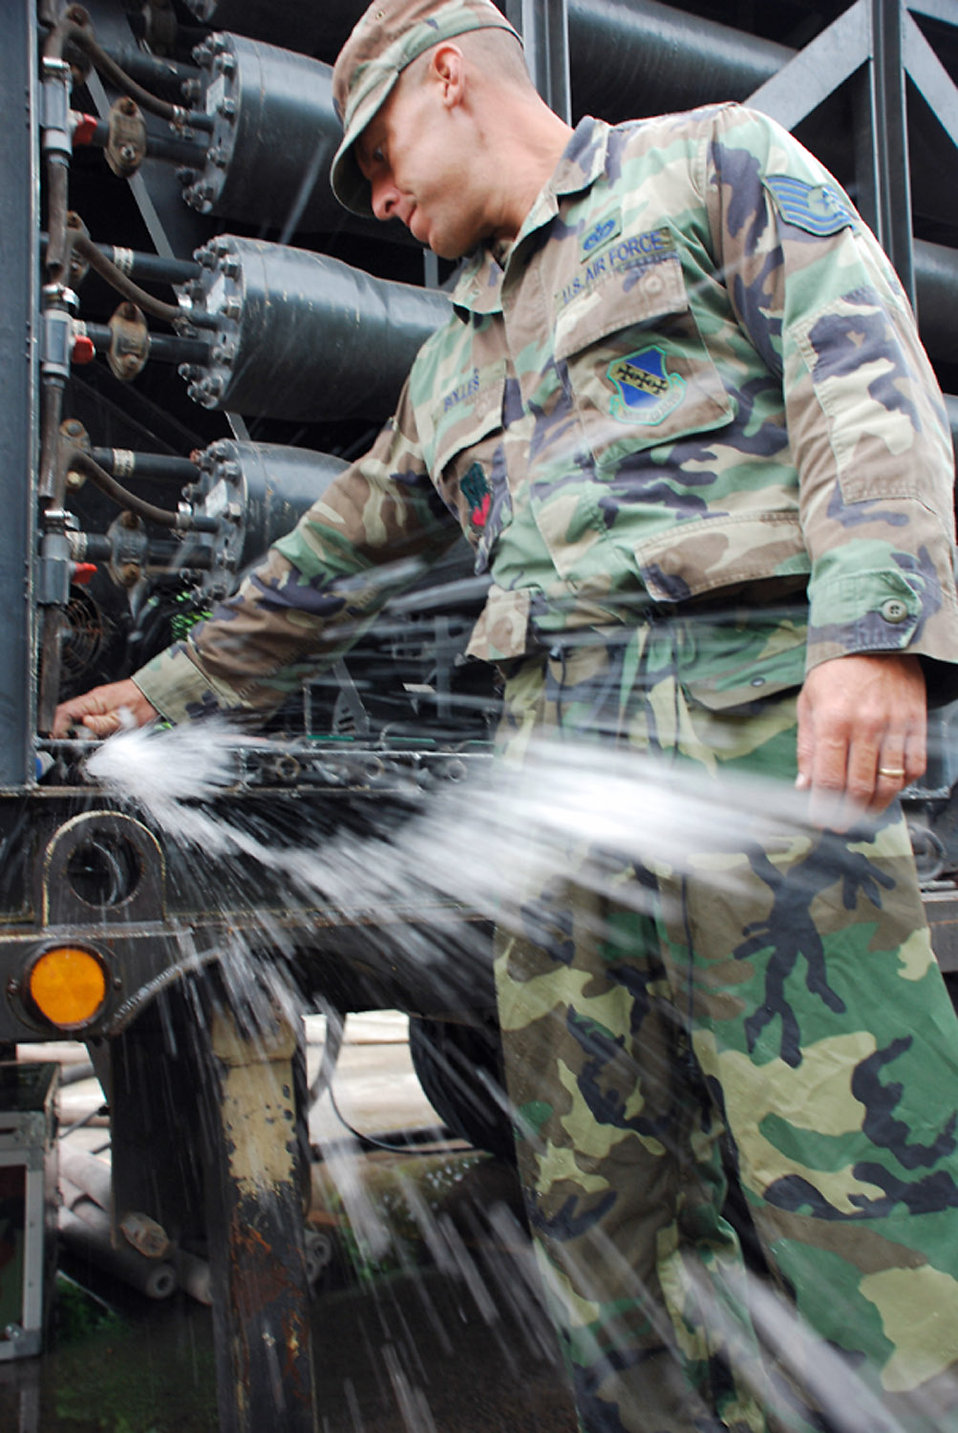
Servicemembers provide water to flood-affected community

Tech. Sgt. Shane Bolles works on a water filtration machine Oct. 29 at La Paz, Honduras. Servicemembers from Joint Task Force-Bravo are participating in a 10-day operation in a nearby community to filter well water. The well water became undrinkable after more than a weeklong stretch of rain caused flooding in the area. Sergeant Bolles is assigned to Soto Cano Air Base, Honduras, deployed from Dyess Air Force Base, Texas.